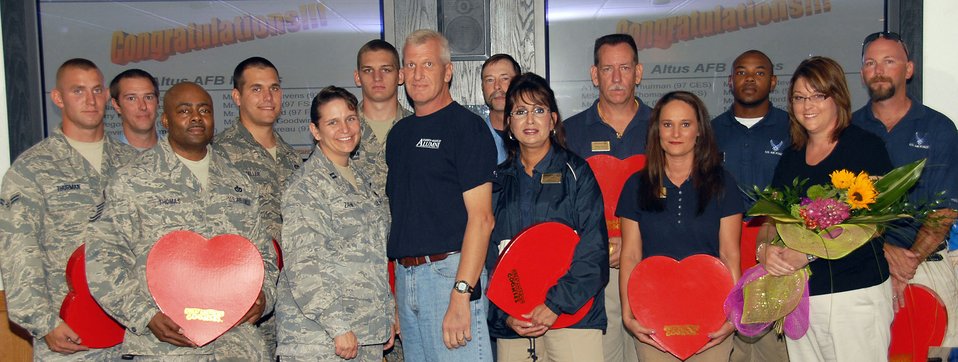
Lifesaver

Chief Master Sgt. Bruce Zahn, center, recognizes the Airmen, EMS and fitness staff who came to his assistance after he suffered a heart attack at the Altus Fitness Center Aug. 31, 2010. Chief Zahn presented cookies to those who assisted him Aug. 9. Wing Commander Col. Ty Thomas also presented commander's challenge coins to the honorees.